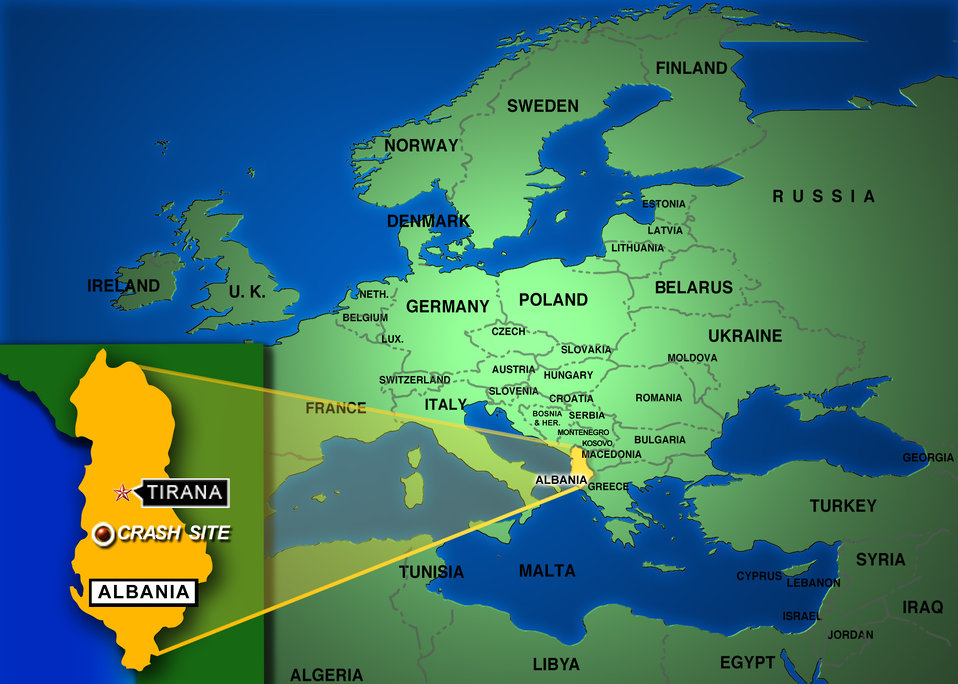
Crash site